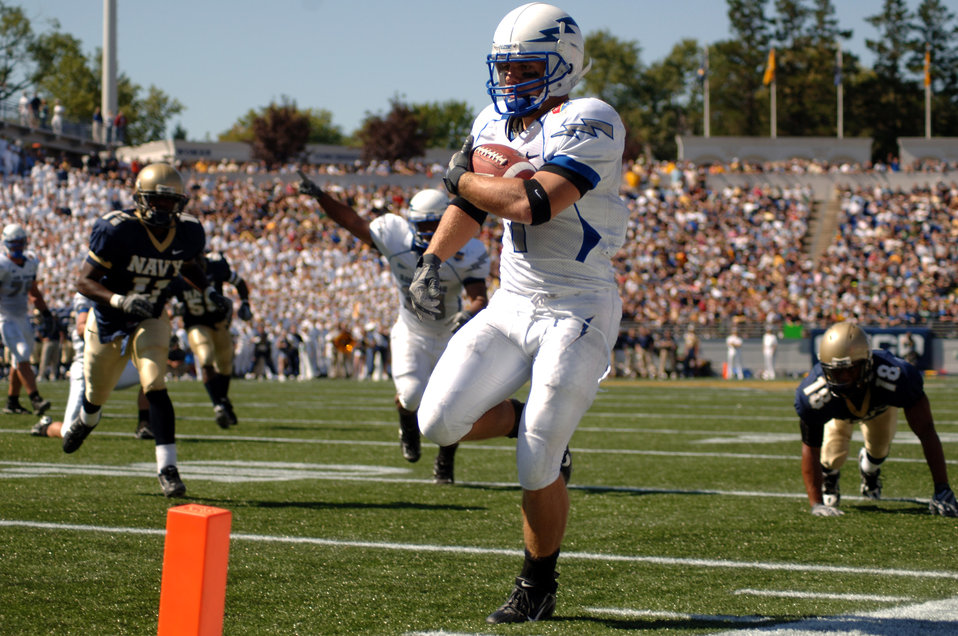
Football: Falcons fall to Navy, 31-20

U.S. Air Force Academy Falcon senior Chad Hall high steps into the end zone at the end of his 16-yard touchdown run in the second quarter of Air Force's 31-20 loss to Navy Sept. 29 at Annapolis, Md. Hall also caught a game-high eight passes for 108 yards.